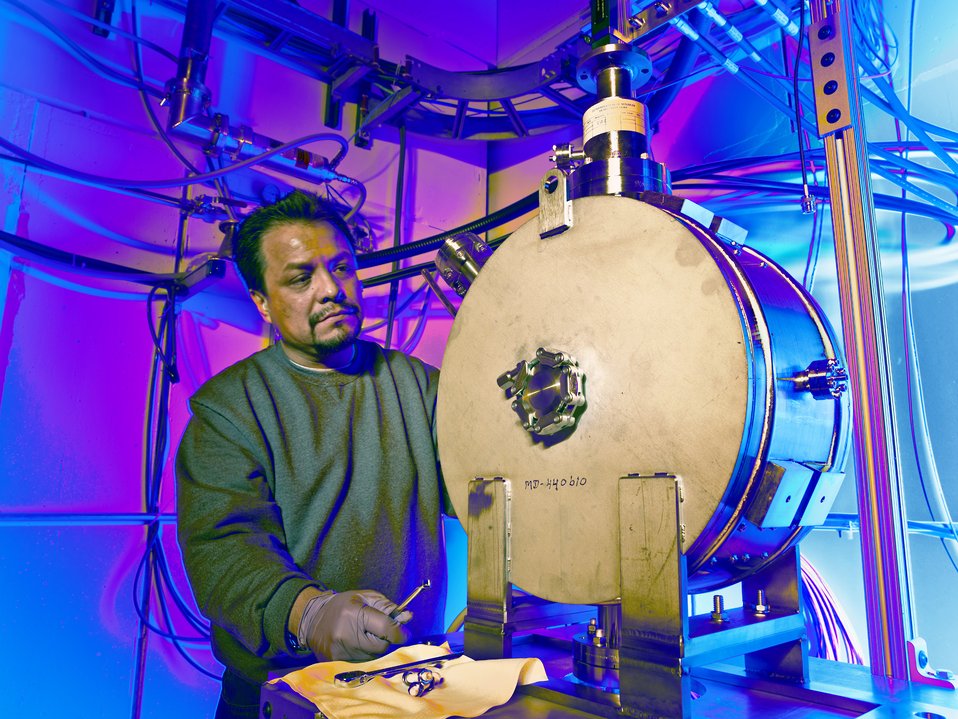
HIGH INTENSITY NEUTRINO SOURCE (HINS) CAVITY #2 ACTIVITY AT MESON DETECTOR BUILDING AT FERMILAB.